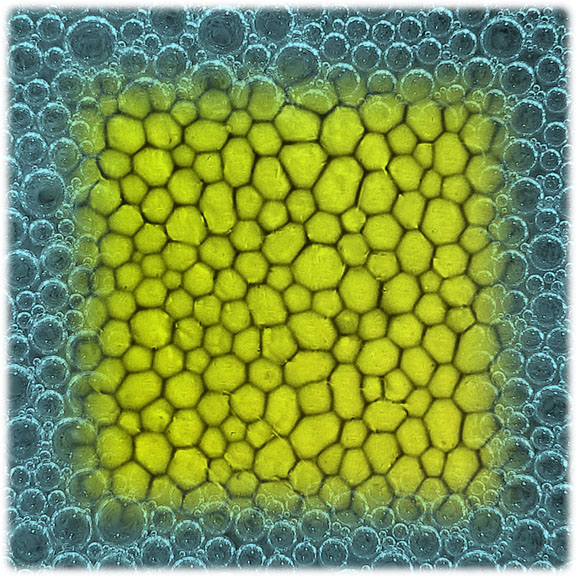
The bubble-like arrangement of magnetic domains in superconducting lead is referred to as suprafroth, a term coined by Ames Lab researcher Ruslan Prozorov.